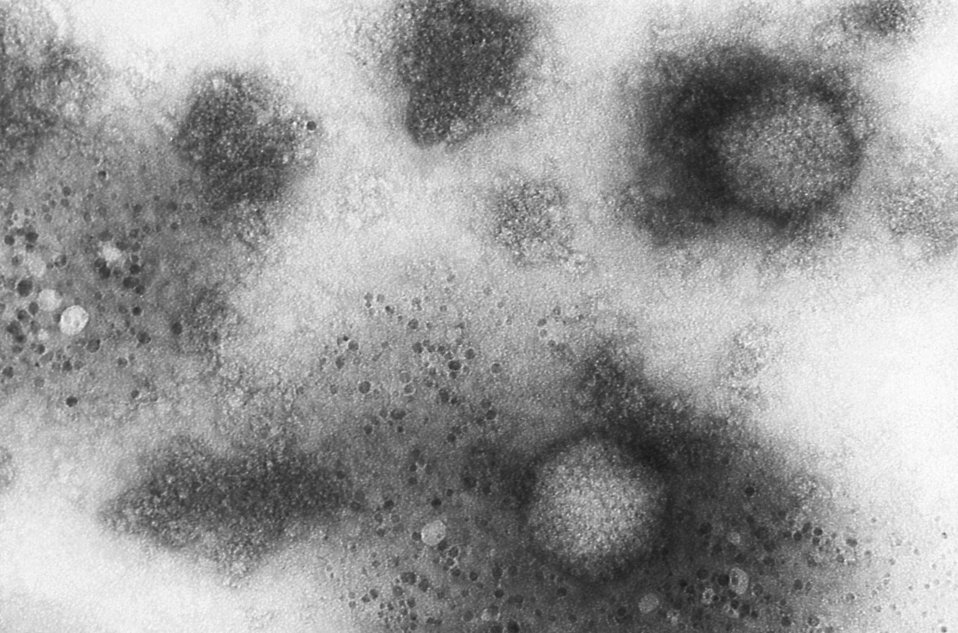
This transmission electron microscope (TEM) reveals some of the ultrastructural morphology exhibited by two Adenovirus-2 virions. The sample had been pelleted, thereby, concentrating the viral particles prior to viewing under the microscope. Visible at this high magnification are the capsomeress, which in this case were hexagonally-shaped, also called hexons, and which together comprised the outer covering of the adenovirus known as a capsid. These adenoviruses displayed an icosahedral symmetry, which means that the shape was characterized by 12 vertices, and 20 facets. Each virion was 70nm - 80nm, and exhibited no spikes.